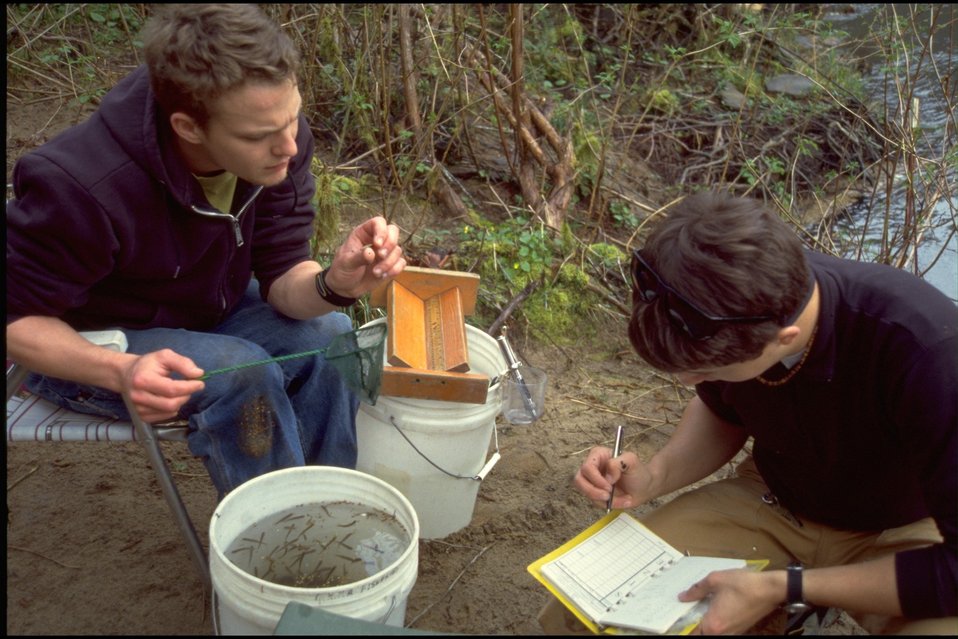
Wolf Creek fish count.